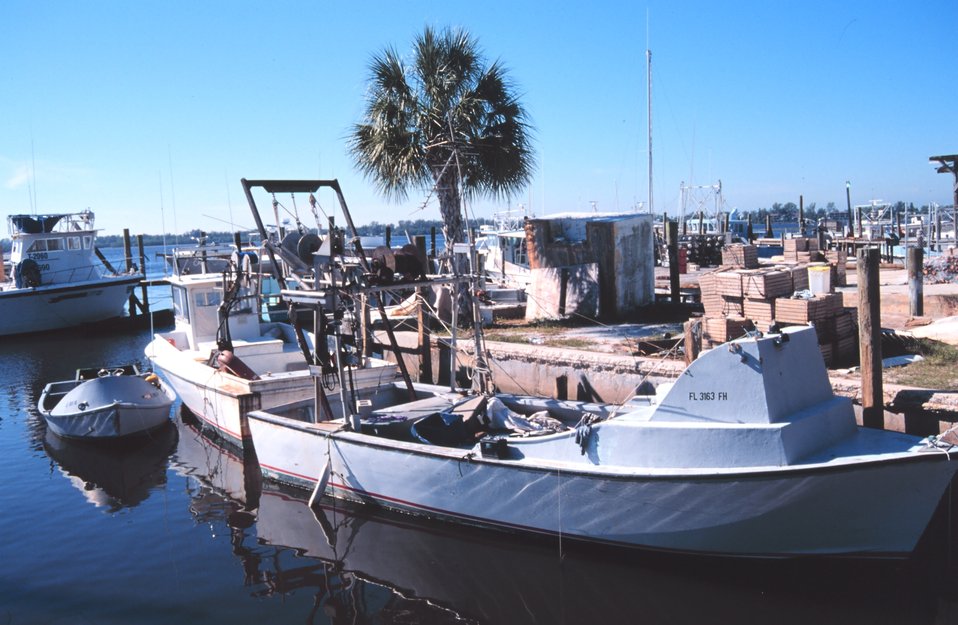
Shrimp, snapper, grouper, and stone crab fishing boats at A. P. Bell Fish Co.